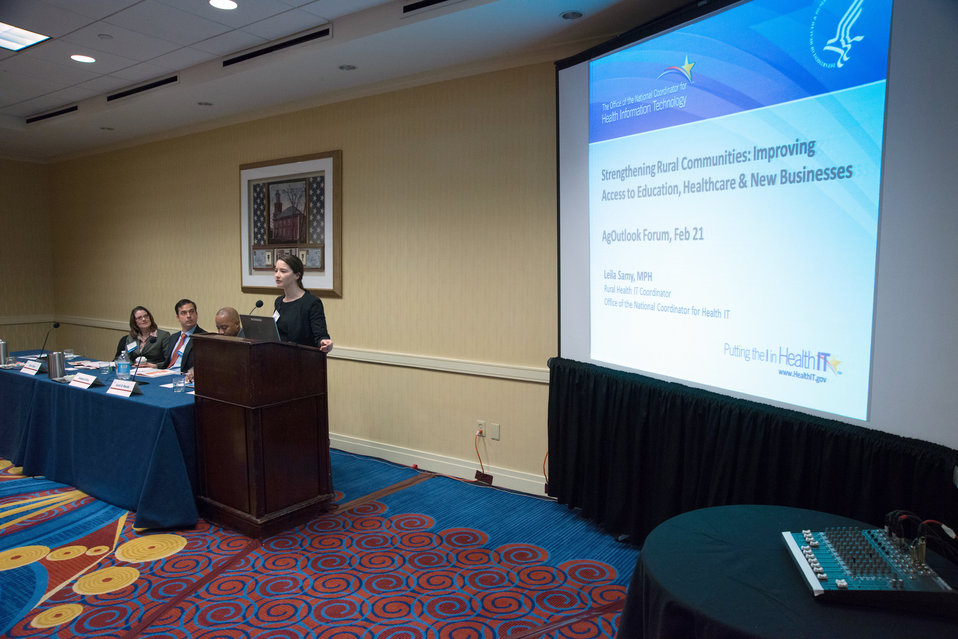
U.S. Department of Health and Human Services (HHS) Office of the National Coordinator Rural Health Information Technology Coordinator Leila Samy speaks at the plenary panel on Strengthening Rural Communities at the 2014 Agricultural Outlook Forum on Friday, Feb. 21, 2014 in Arlington, VA. The panel discussed finding ways to create opportunities and deliver resources to strengthen rural economies. The session demonstrated how technology is used to help farmers improve crop yield, conserve water, use monitoring to leverage markets, and provide access to health care and social services. (L to R Veterans Health Administration Office of Rural Health Director Gina Capra, TerraVu Chief Executive Officer Joaquin Silva, U.S. Department of Commerce National Telecommunications and Information Administration Broadband Technology Opportunities Program Communications Program Specialist Scott D. Woods, and U.S. Department of Health and Human Services (HHS) Office of the National Coordinator Rural Health Information Technology Coordinator Leila Samy). The U.S. Department of Agriculture’s (USDA) annual Agricultural Outlook Forum brings together the agricultural community to discuss policy, trade, science, rural development, and the economic outlook for the coming year. The Forum also focuses on forestry, health and nutrition issues, and the changing dynamics and face of rural America.